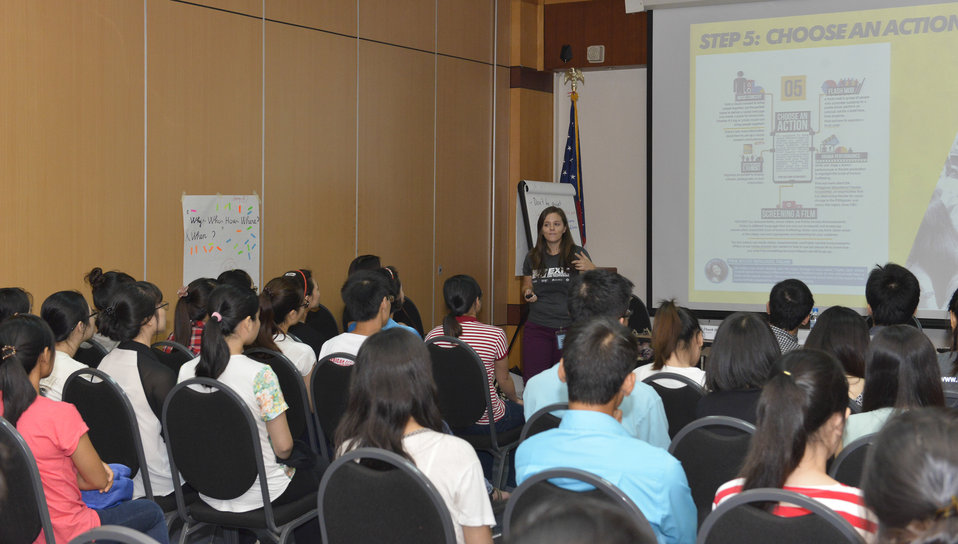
MTV Exit Talk to Engage Students in the Fight against Human Trafficking

Hanoi. June 5, 2014.